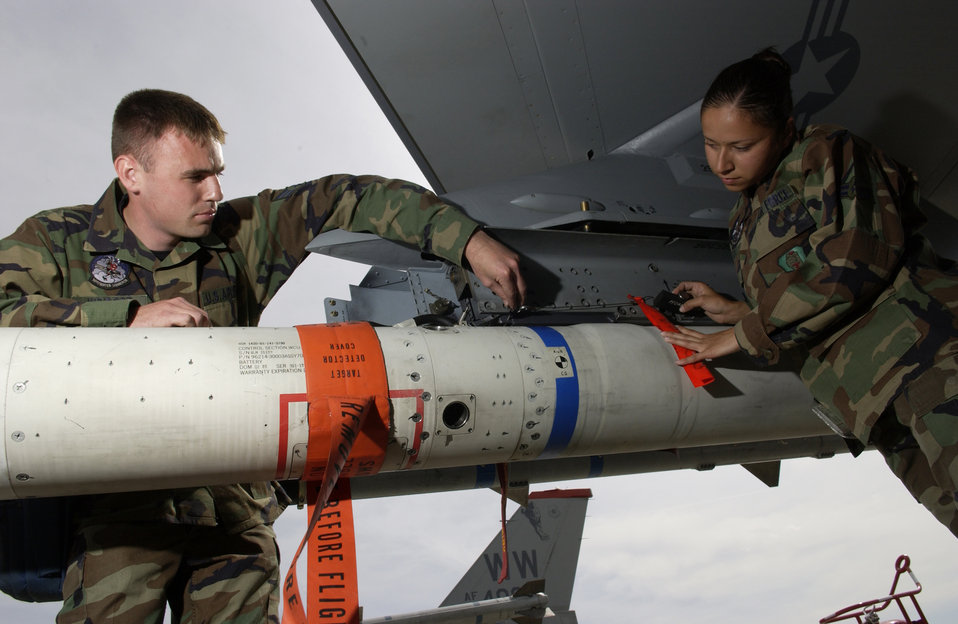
Missile unloading

NELLIS AIR FORCE BASE, Nev. -- Senior Airman Eric Windsor and Airman 1st Class Mabel Arreola unload an AGM-88 high-speed anti-radiation missile from an F-16 Fighting Falcon after a training mission here March 18. They are weapons loaders assigned to the 35th Fighter Wing at Misawa Air Base, Japan.